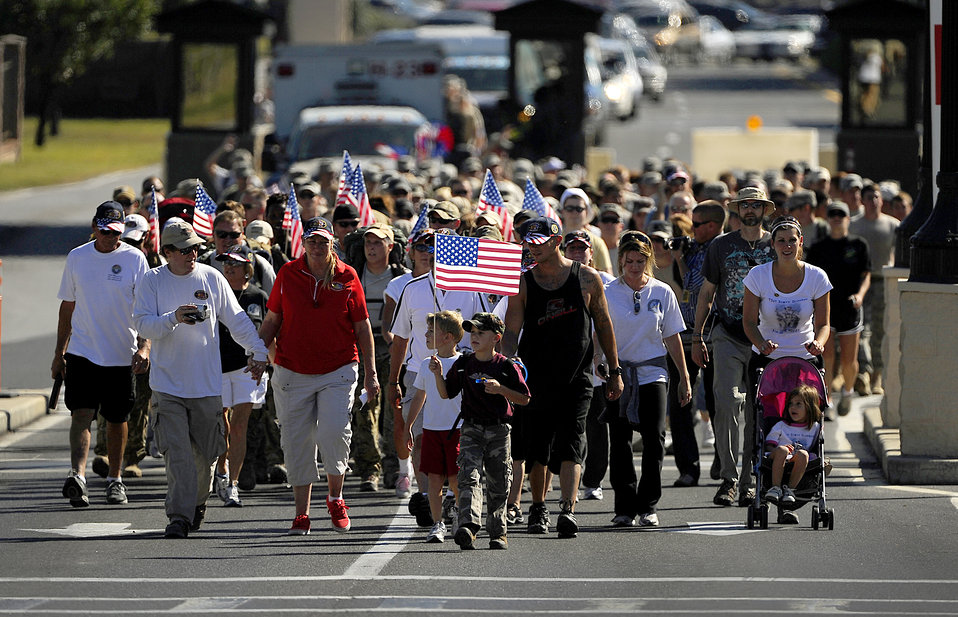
Special Tactics Memorial March

Surviving family members, a few wounded Airmen and members of the Air Force Special Operations Command, join fifteen Special Tactics Airmen Oct. 21, 2010, on the final stretch of an 860-mile memorial march from Lackland Air Force Base, Texas, to Hurlburt Field, Fla.